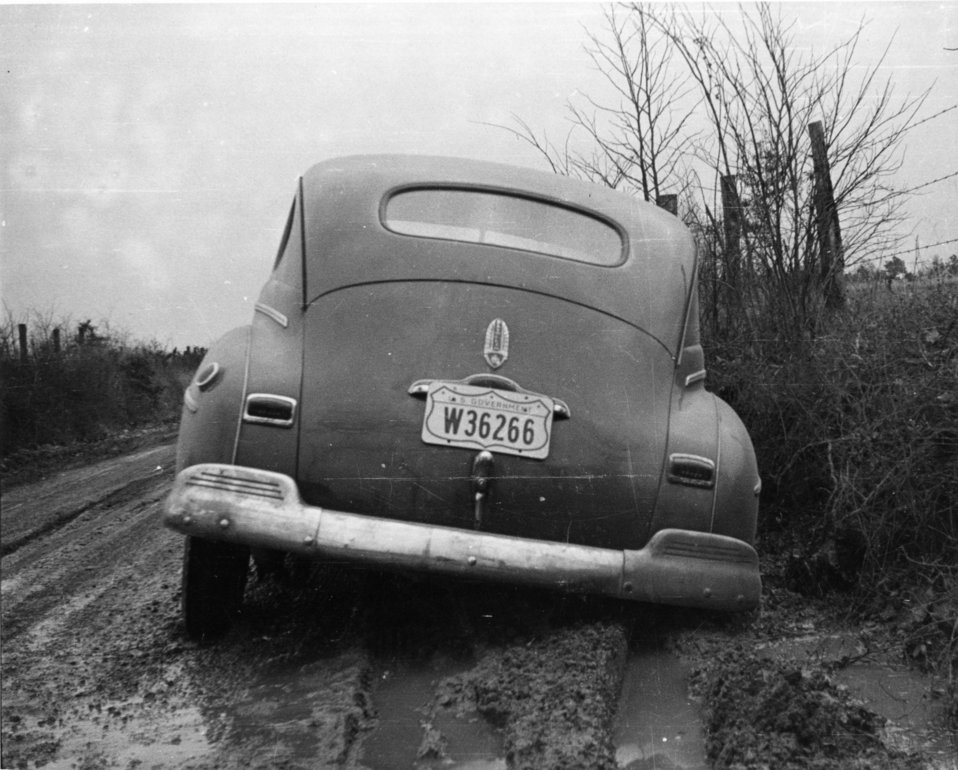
Recreation at Oak Ridge